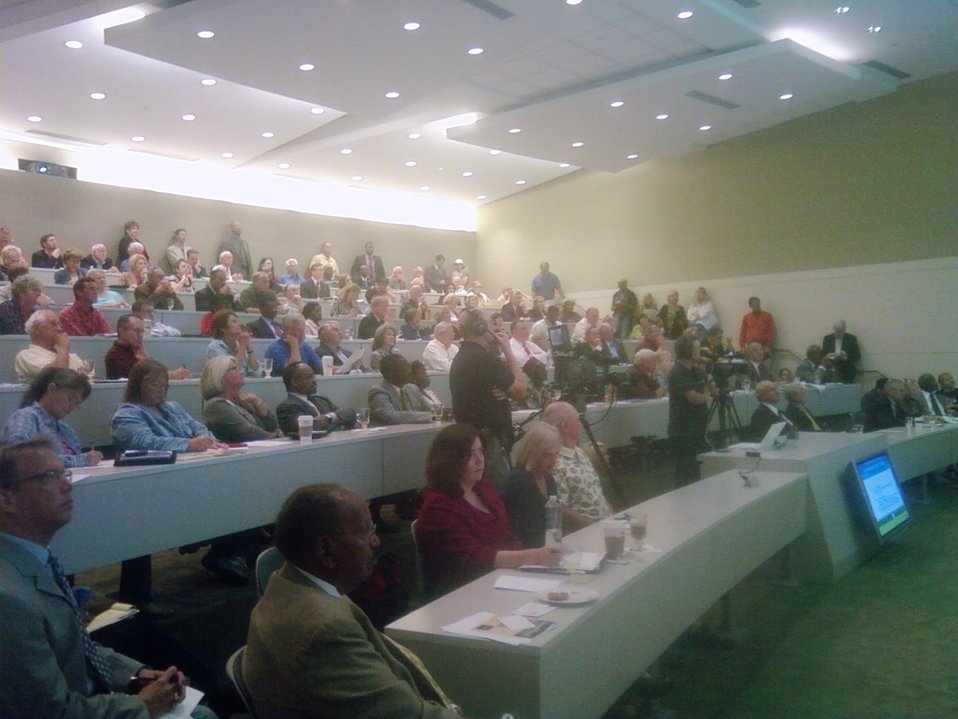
SC event 11

Broadband Field Hearing, in Charleston, South Carolina. 10-06-09